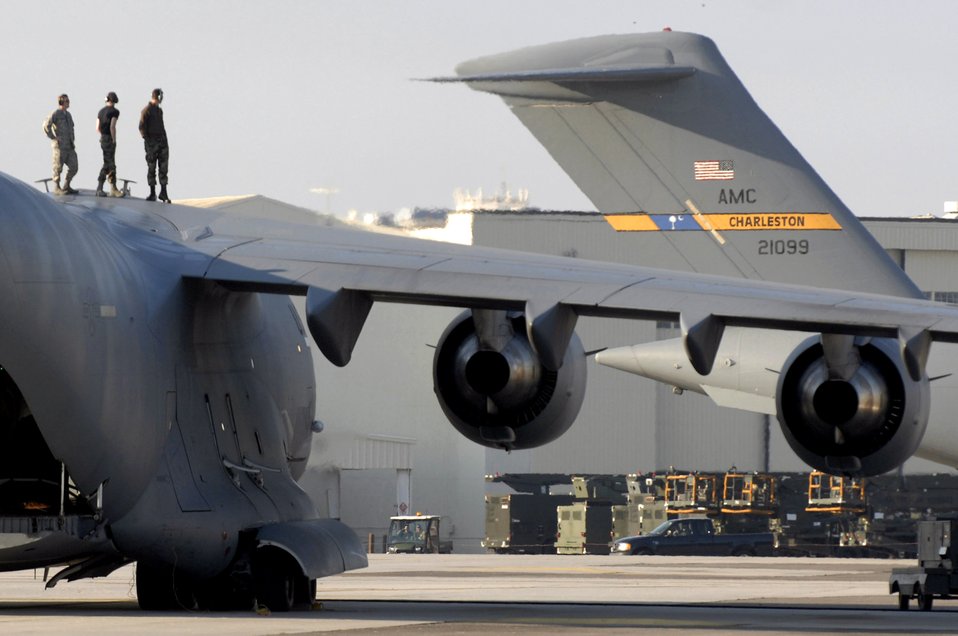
Getting a bird's eye view

Maintenance Airmen at Charleston Air force Base, S.C. pause while working on a C-17 Globemaster III Dec. 20 to watch another C-17 taxi by.